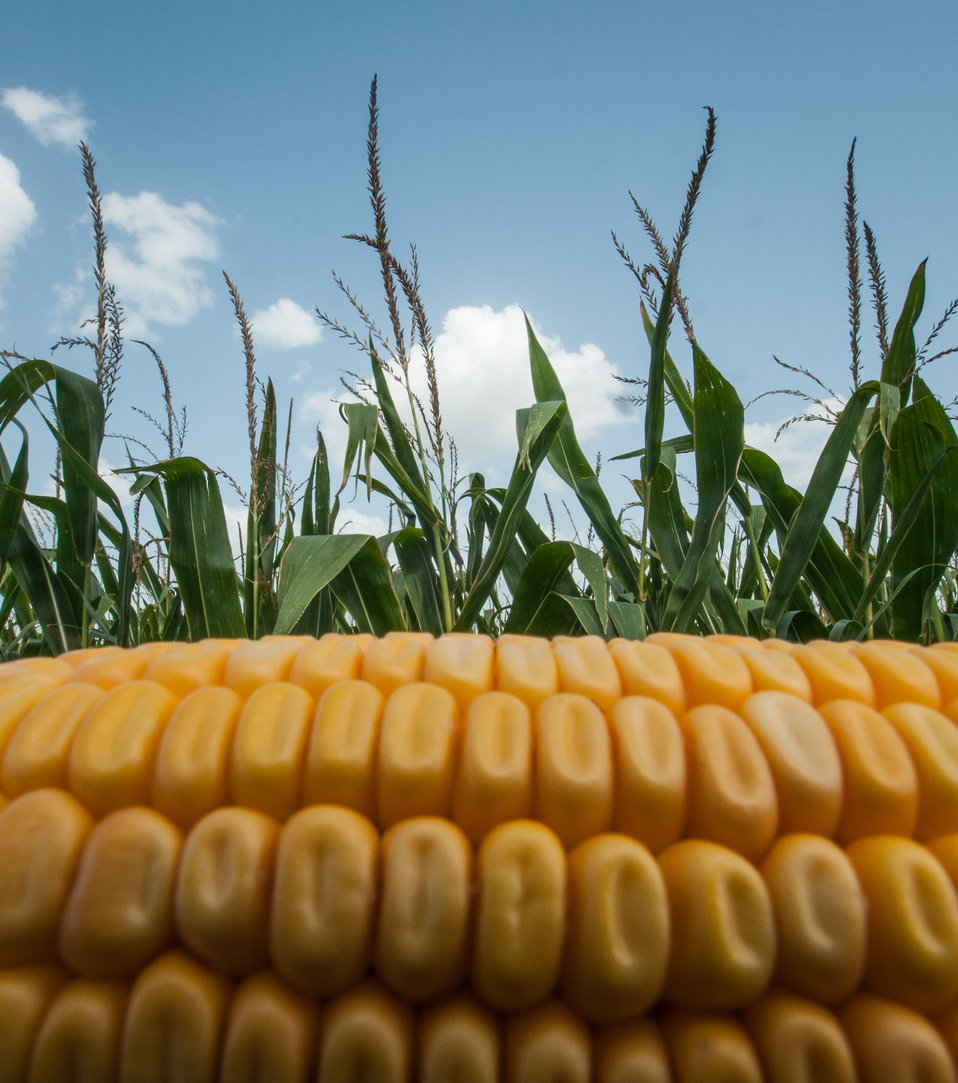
This is a close-up view of #2 yellow corn on T and S Marek Farms in Wharton County, TX on Jun. 20, 2013. The 3,000 acre farm produces corn and milo (grain sorghum) for feed, upland cotton and cattle.